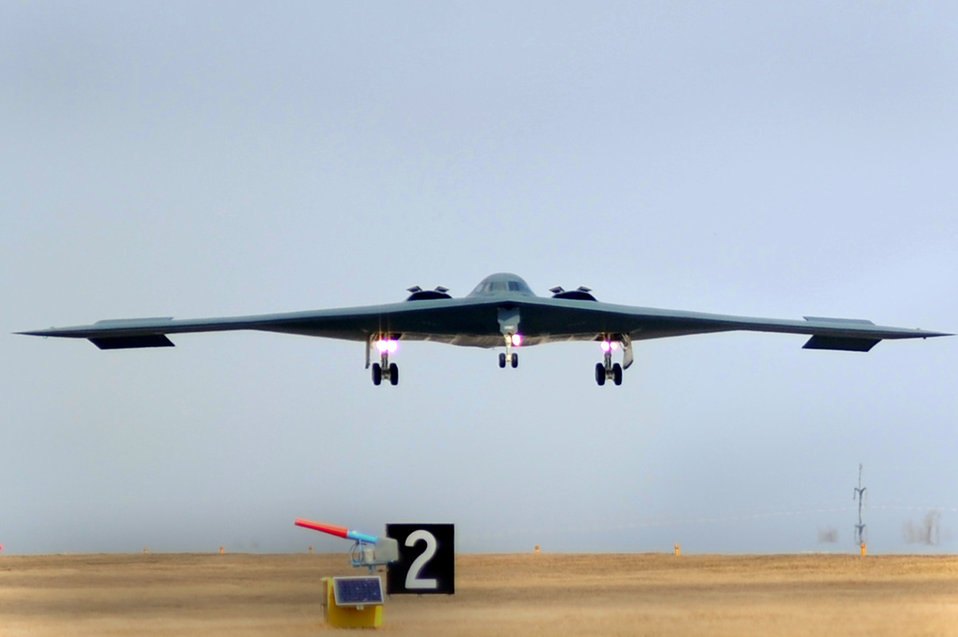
That's the Spirit

A B-2 Spirit returns to Whiteman Air Force Base, Mo., March 20, 2011, after completing a mission.